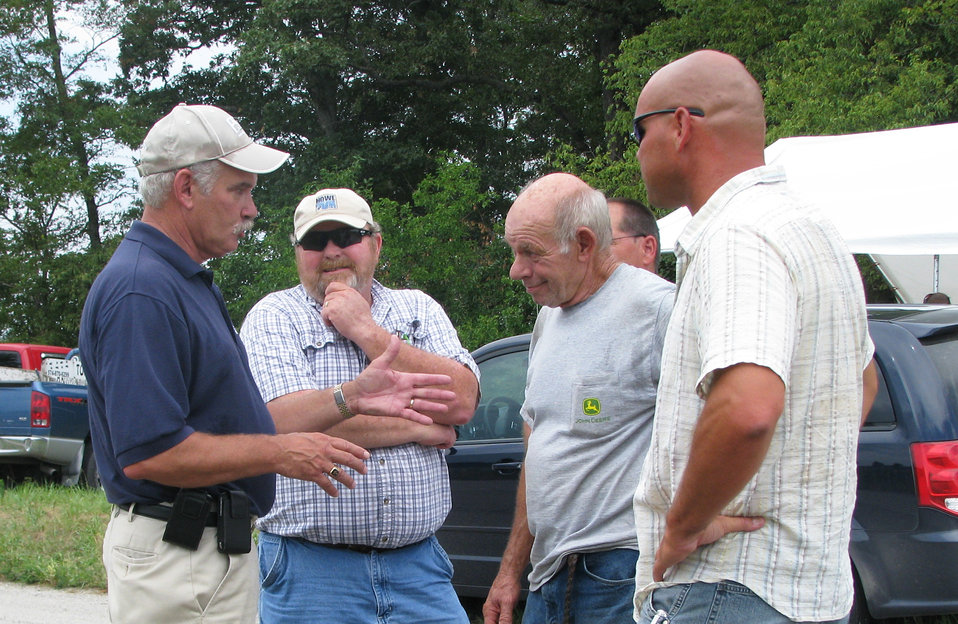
Agriculture Under Secretary for Farm and Foreign Agriculture Service (FFAS) Michael Scuse (left) discusses the drought conditions being felt across the country with farmers in Idaville, White County, IN on Thursday, July 19, 2012. Agriculture Secretary Vilsack has instructed Agriculture subcabinet leaders to travel to affected drought areas to augment ongoing assistance from state-level U.S. Department of Agriculture (USDA) staff and provide guidance on USDA’s new, streamlined disaster process. The U.S. Drought Monitor currently reports that 61 percent of the continental United States is in a moderate to exceptional drought.